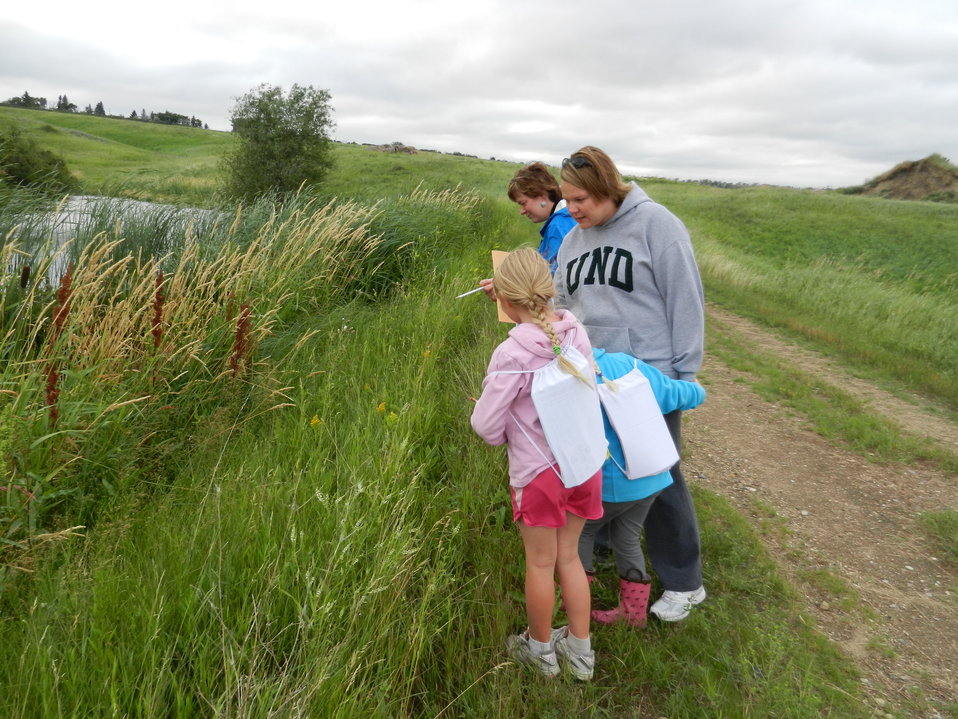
Nature Hike on Des Lacs NWR

Visitors check out wetland vegetation on a guided Nature Hike on Des Lacs National Wildlife Refuge in North Dakota. Visitors learned about the life requirements wildlife need to survive and how the Refuge helps provide them.